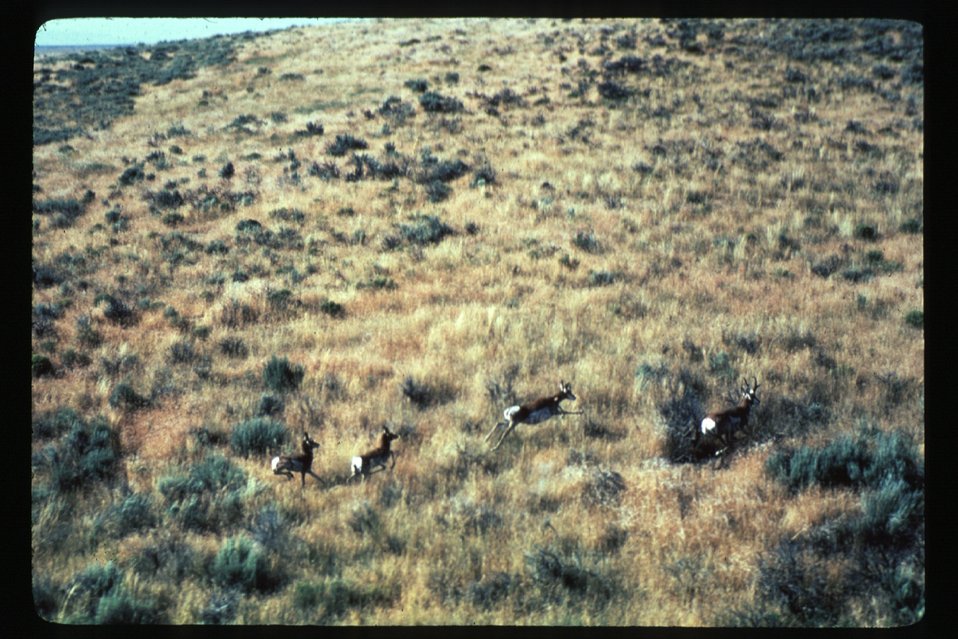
Antelope Wildlife LSRD Lower Snake River District